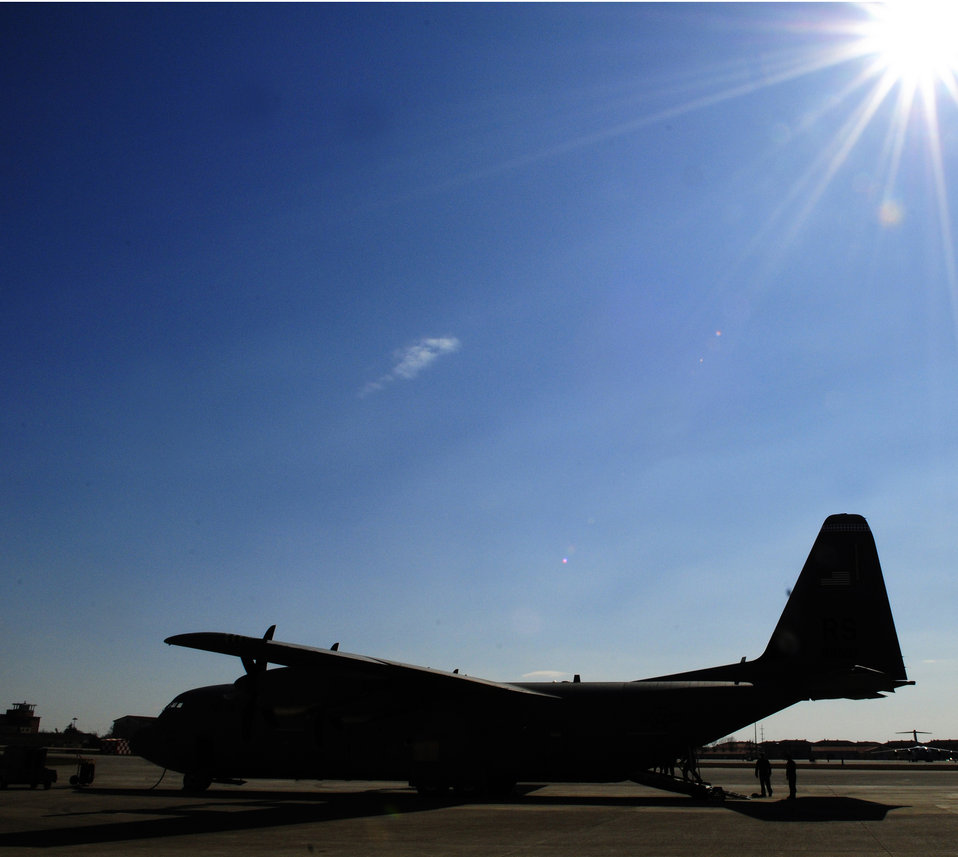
Odyssey Dawn

A U.S. Air Force C-130 Hercules sits on the runway after arriving at Aviano Air Base, Italy, from Ramstein Air Base, Germany, March 21, 2011. The aircraft arrived carrying equipment and personnel to support Operation Odyssey Dawn. Joint Task Force Odyssey Dawn is the U.S. Africa Command task force established to support the larger international response to the unrest in Libya. A broad coalition of nations are partnering to enforce U.N. Security Council Resolution (UNSCR) 1973, which authorizes all necessary means to protect civilians in Libya under threat of attack by Qadhafi regime forces. JTF Odyssey Dawn is commanded by Admiral Samuel J. Locklear, III.